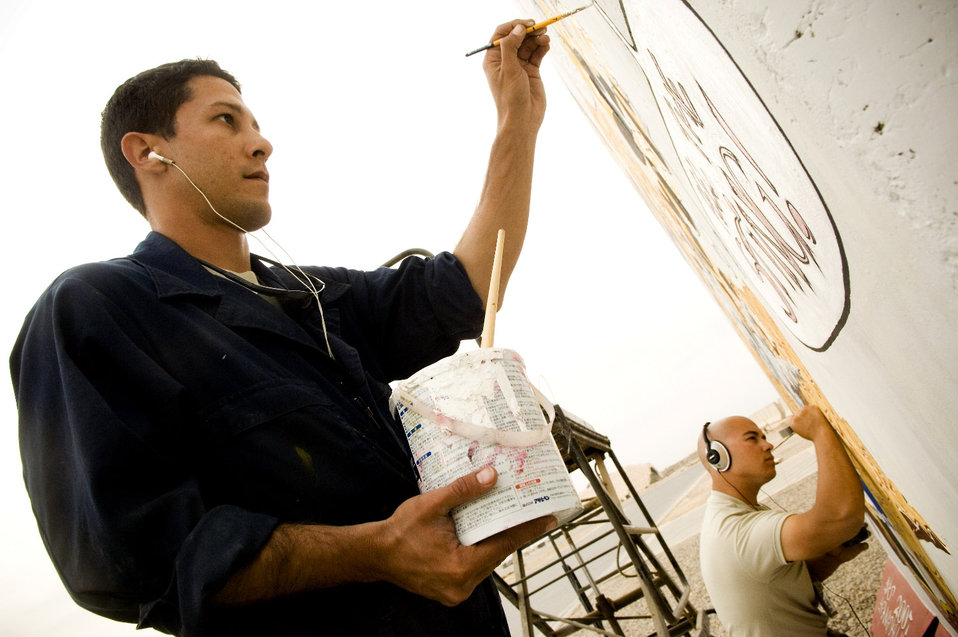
Painted legacy builds morale

Airmen 1st Class Francisco Coraliz and Andre Cotan add details Dec. 1 on a mural they are painting on the flightline at Balad Air Base, Iraq. Following approved guidelines, deployed members are encouraged to paint legacy murals to build unit morale. Airmen Cotan and Coraliz are with the 322nd Expeditionary Aircraft Maintenance Squadron and deployed from Spangdahlem Air Base, Germany.